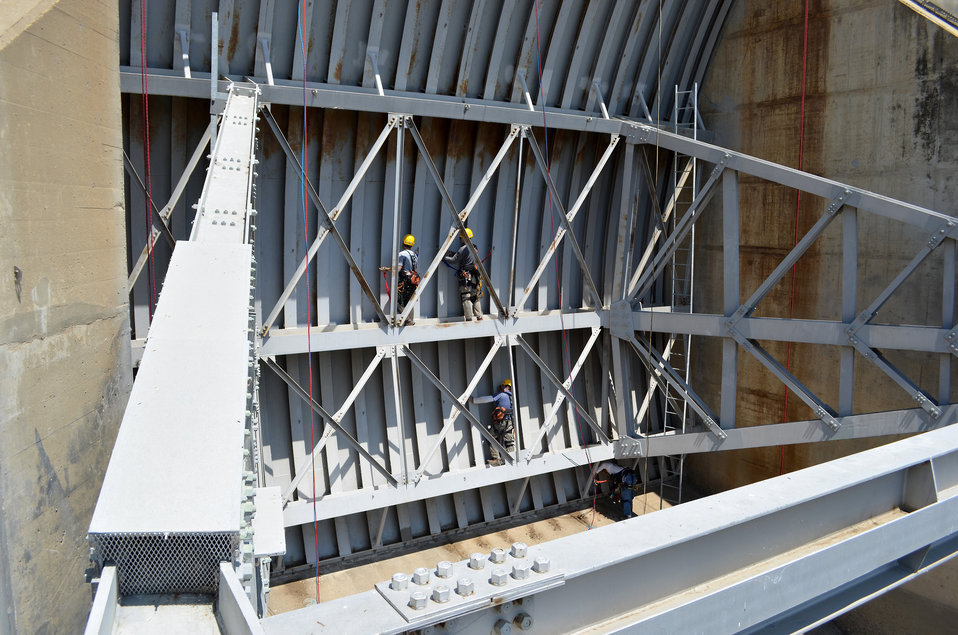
Sacramento District engineers and climb team members

U.S. Army Corps of Engineers Sacramento District engineers and climb team members Charles Jeung, Christopher Abela, Levi Bowers and Tim Lee inspect a tainter gate at Pine Flat Dam, near Fresno, Calif., June 17, 2013. Inspections are conducted every five years and are necessary to identify any issues early and ensure the dam continues to offer multiple benefits to the public. Tainter gates are a type of flood gate used in dams to control water flow. Pine Flat Dam reduces flood risk to Fresno County and stores water used for water supply and hydroelectric power.